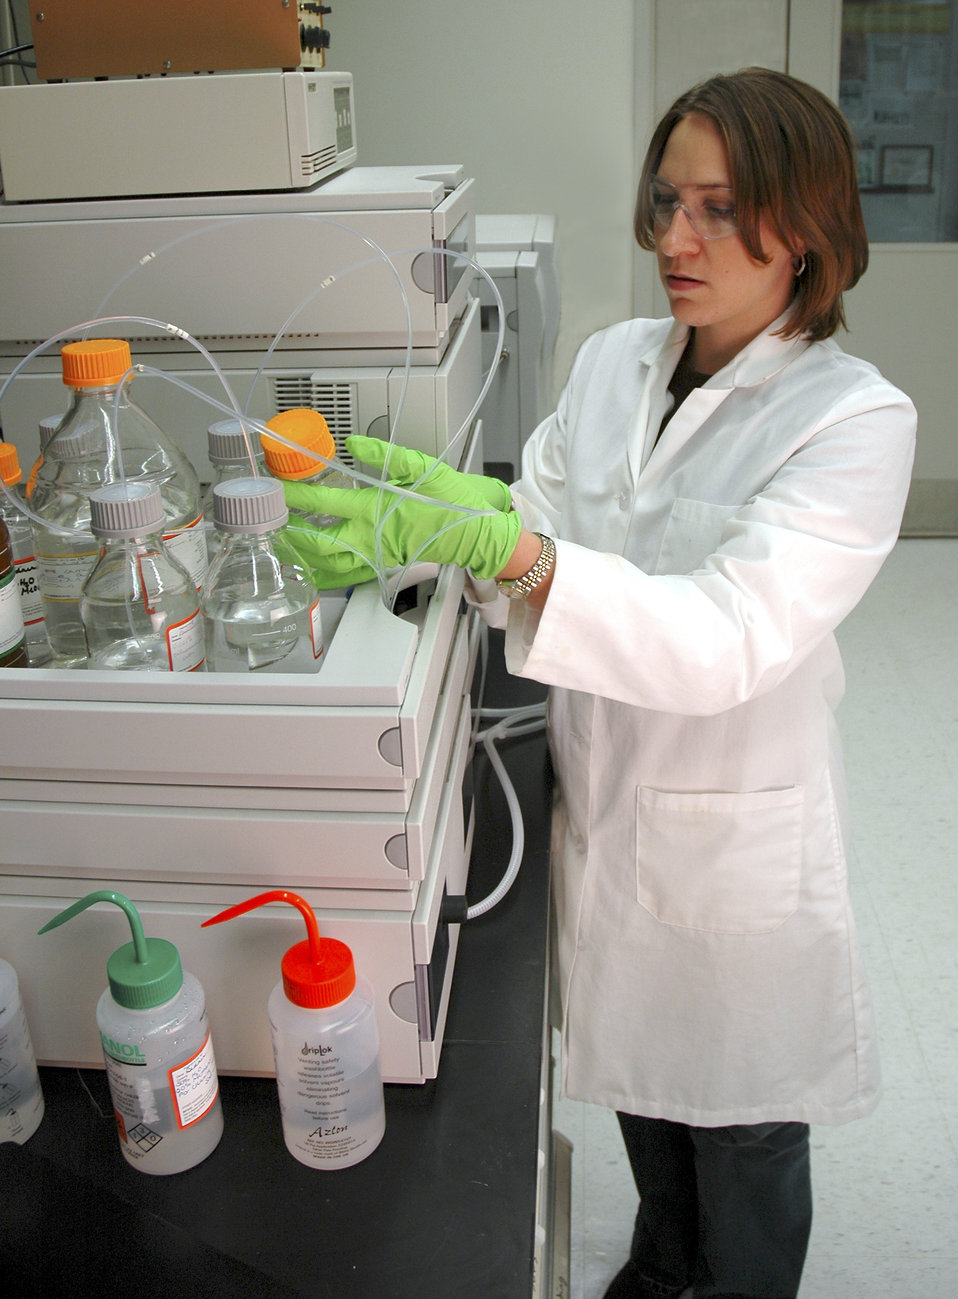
Waste Processing; Drugs in Wastewater

NIST research chemist Mary Bedner prepares to use liquid chromatography and mass spectrometry to analyze the chemical byproducts produced by reacting pharmaceuticals with chlorine.